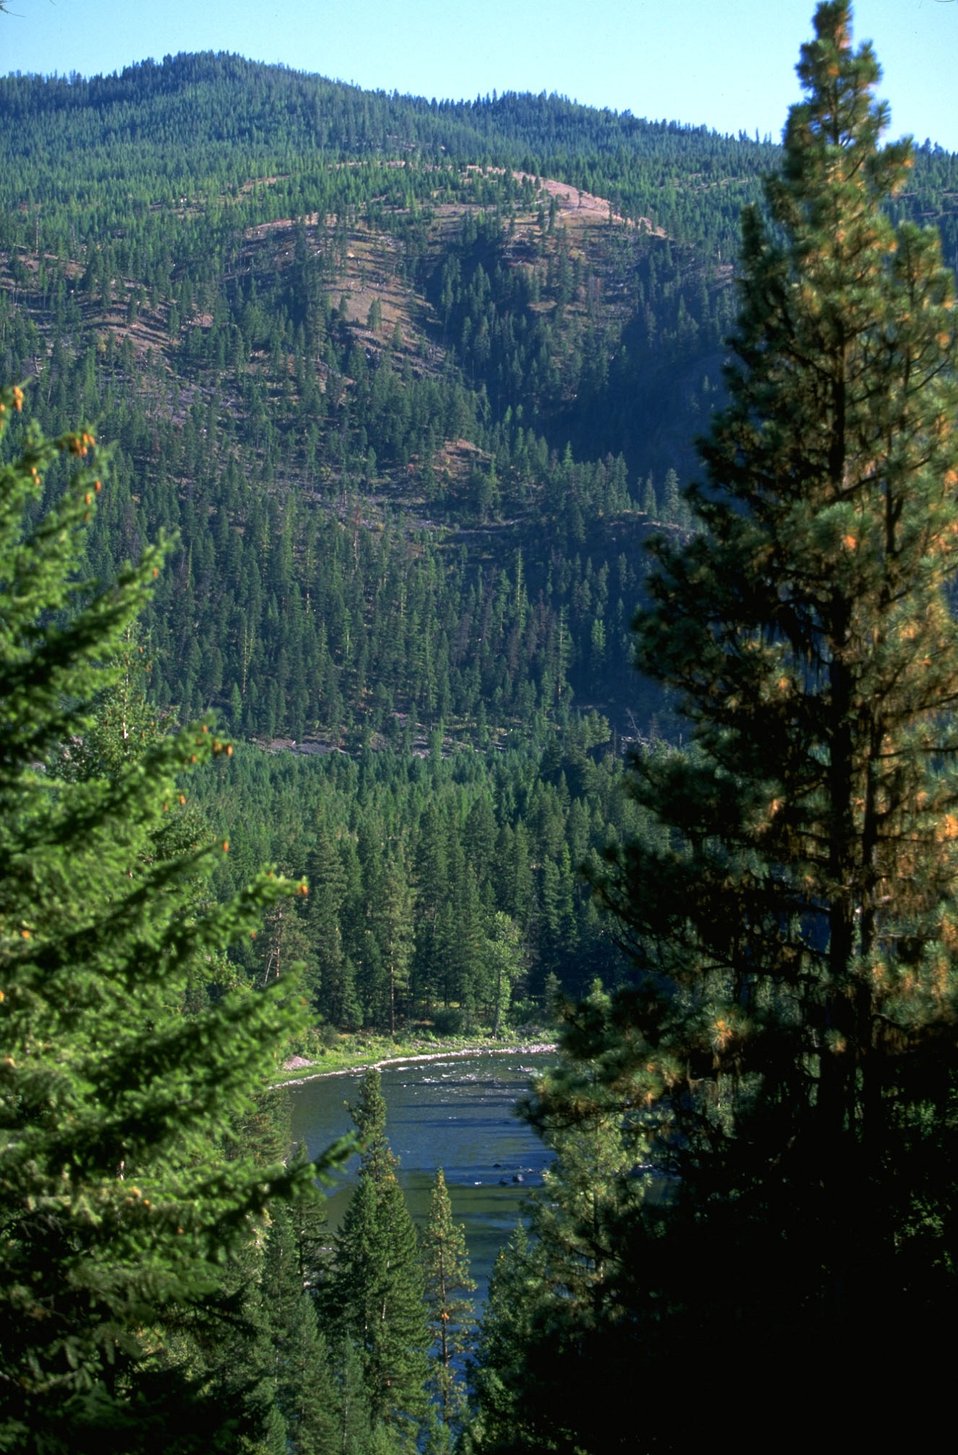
Forest view along the Blackfoot River VERTICAL